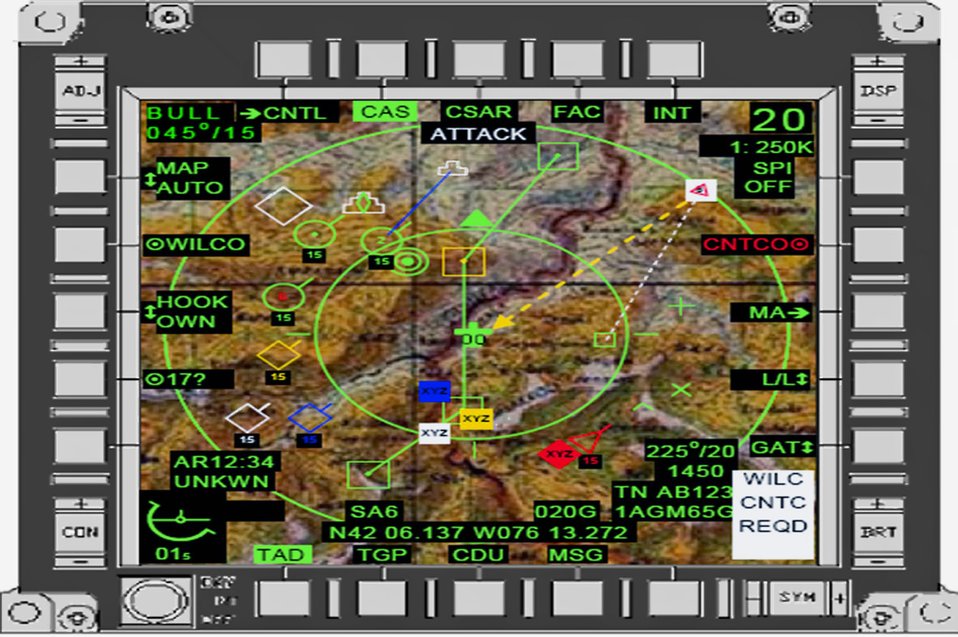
A-10s get digital makeover

Pictured is a representation of what the dat link looks like to A-10 Thunderbolt II pilots. The most significant change to the newly modified A-10C is the addition of the Situational Awareness Data Link. With SADL, the A-10C joins a massive